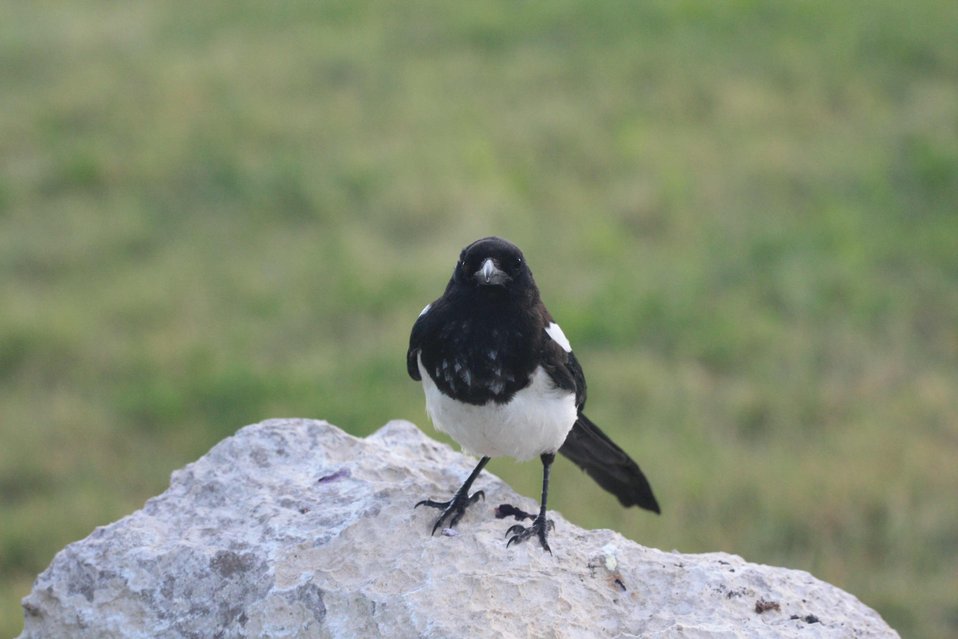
Inquisitive Magpie

Magpies are familiar birds throughout western North America.

According to the Cornell Lab of Ornithology, magpies have associated with people for a long time.They frequently followed hunting parties of Plains Indians and fed on leftovers from bison kills. On their expedition, Lewis and Clark reported magpies boldly entering their tents to steal food.

Credit: USFWS / Ann Hough, National Elk Refuge volunteer